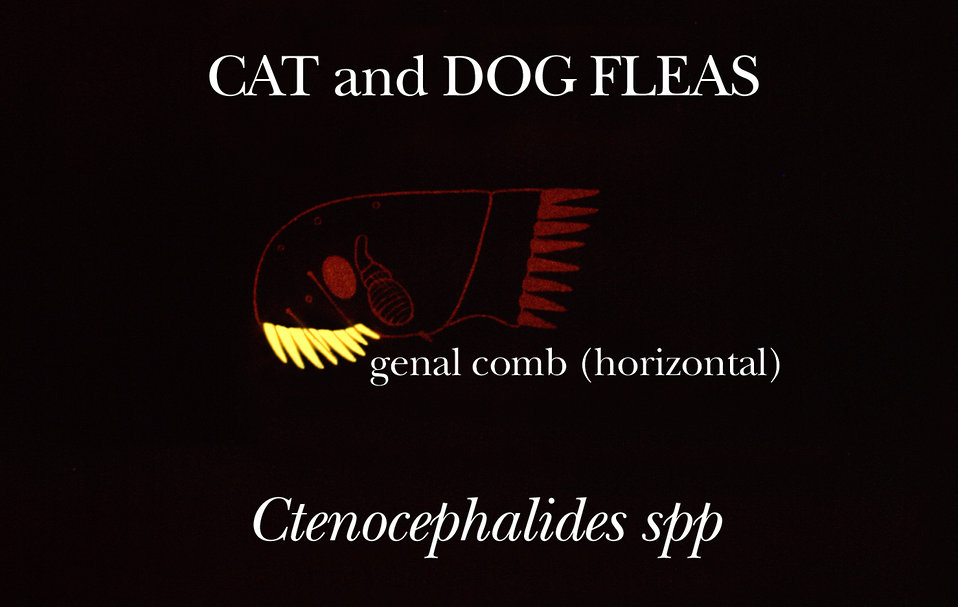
This illustration shows one of the identifying characteristics of the cat and dog fleas of the genus Ctenocephalides.